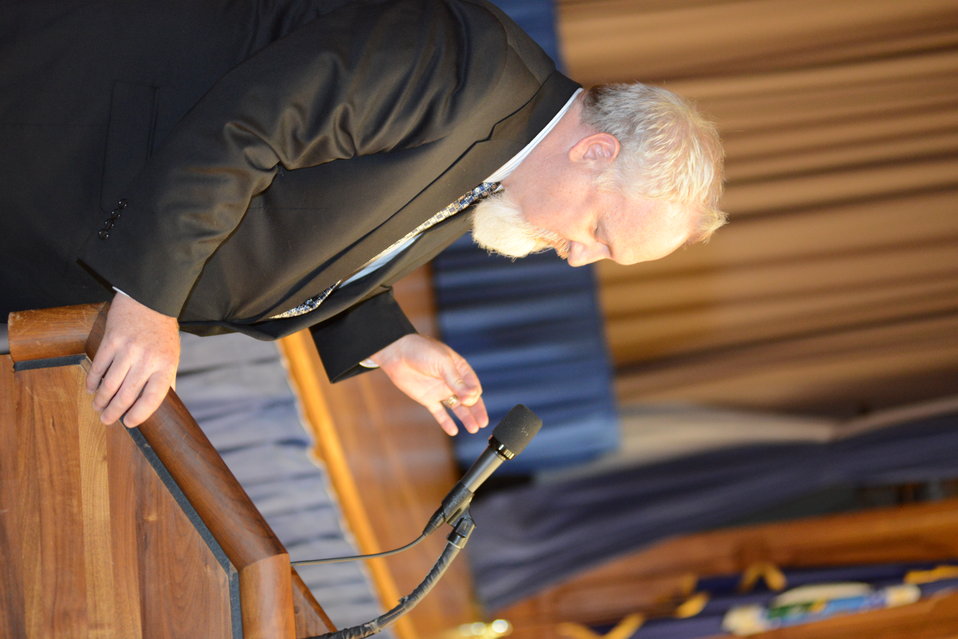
Celebrity Chef Art Smith gives the keynote address at the 2014 Lesbian/Gay/Bisexual/Transgender (LGBT) Pride Observance event held in the Jefferson Auditorium at USDA in Washington, D.C. on Thursday, Jun. 5, 2014.